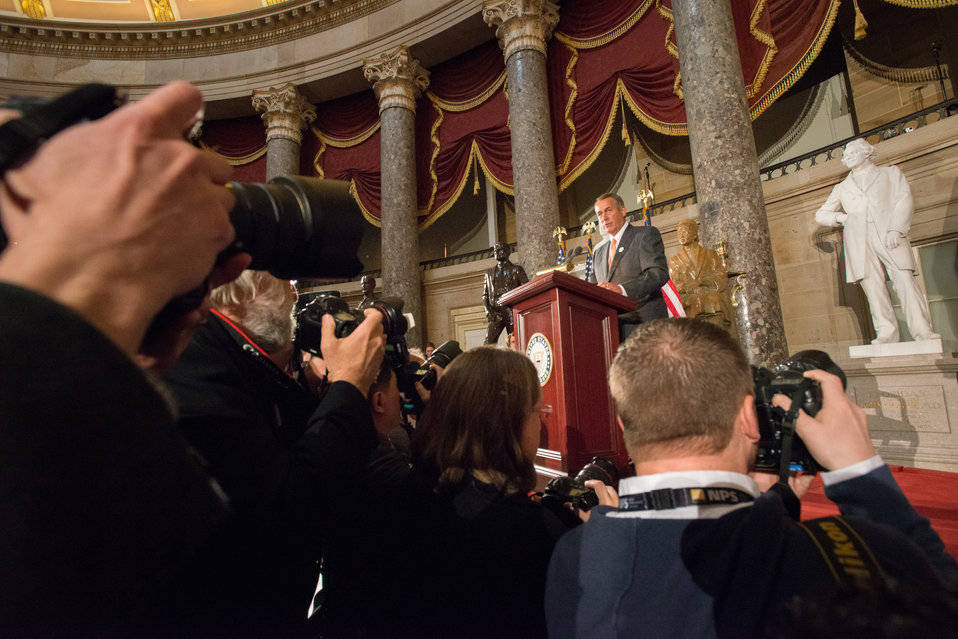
Speaker of the House of Representatives John Boehner speaks at the dedication of the Dr. Norman Borlaug statue in the National Statuary Hall at the U. S. Capitol in Washington, D.C. on Tuesday, Mar. 25, 2014. Today commemorates 100 years since Dr. Borlaug’s birth. Through his scientific and humanitarian achievements, Nobel Laureate Dr. Norman E. Borlaug (1914-2009) has been credited with saving millions of people from starvation in developing countries. His collaborative work with scientists in Mexico on a high-yielding, disease resistant dwarf wheat sparked the Green Revolution of the 1960s. The National Statuary Hall Collection in the U.S. Capitol is composed of statues donated by individual states to honor persons notable in their history.